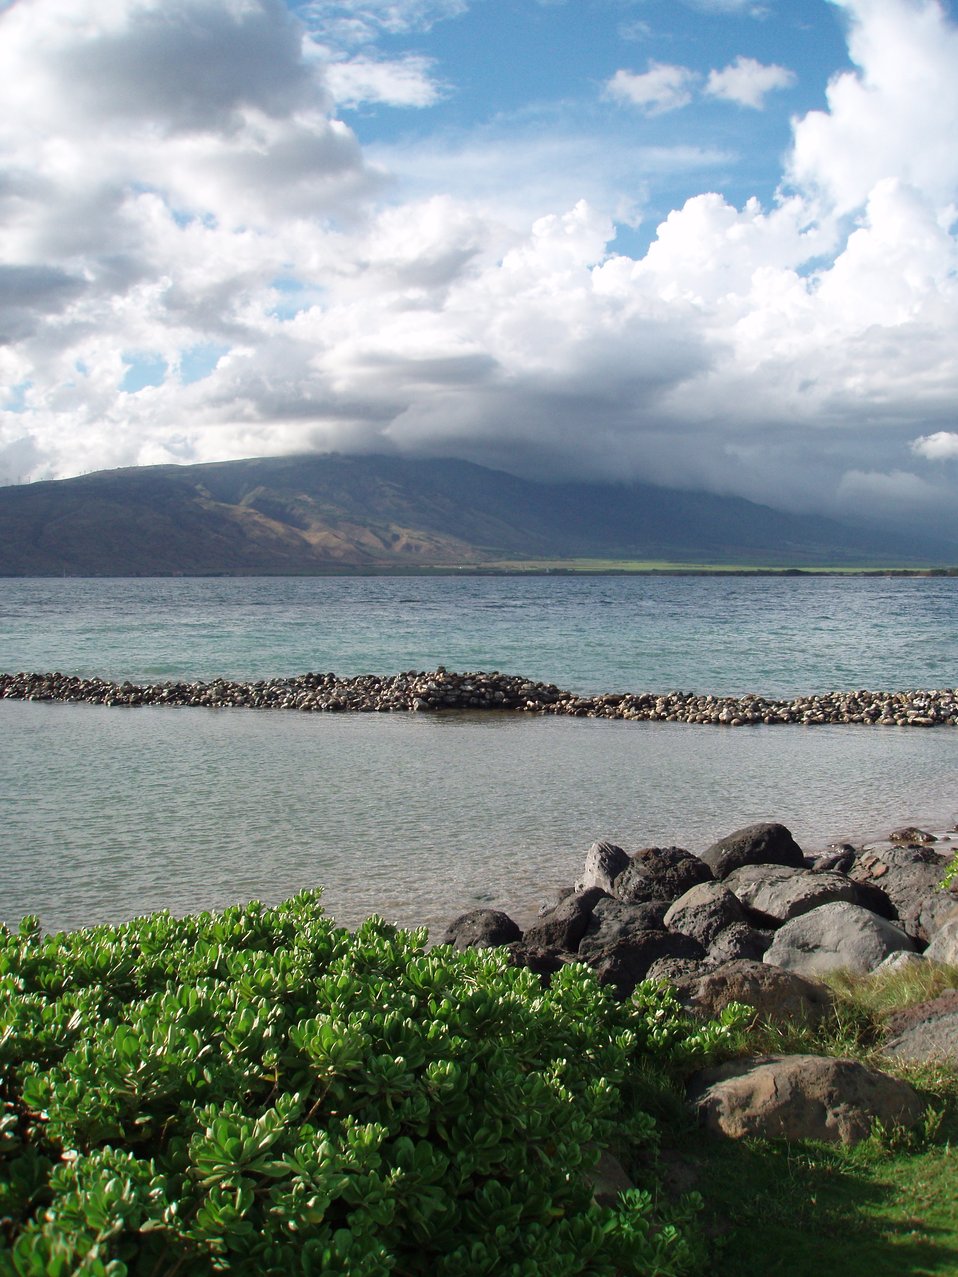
Lava boulders and enclosed Hawaiian fish pond - early form of aquaculture.